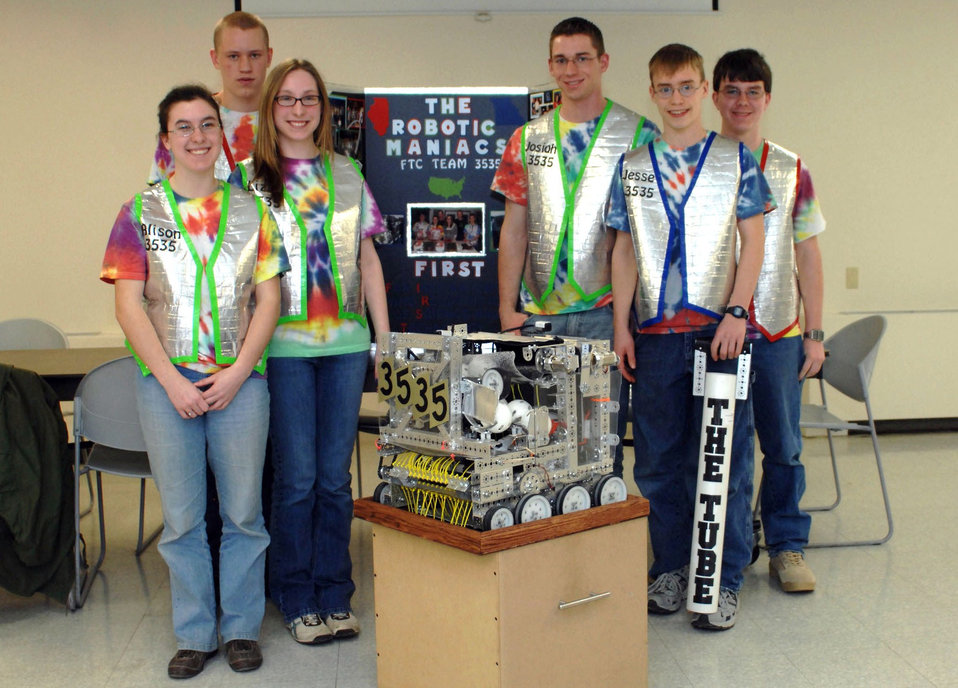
Scott youth participate in international robot competition

The Robotic Maniacs, a six-person team consisting of homeschooled high school students, four of whom are military dependents from Scott Air Force Base, Ill., pose with Zippy the robot March 3, 2010, at Scott AFB. The team will be traveling to Atlanta in mid-April to compete against 100 teams from all over the world during the FIRST, For Inspiration and Recognition of Science and Technology, World Festival. FIRST is a world-wide organization that promotes an interest in engineering and technology among school-age students.